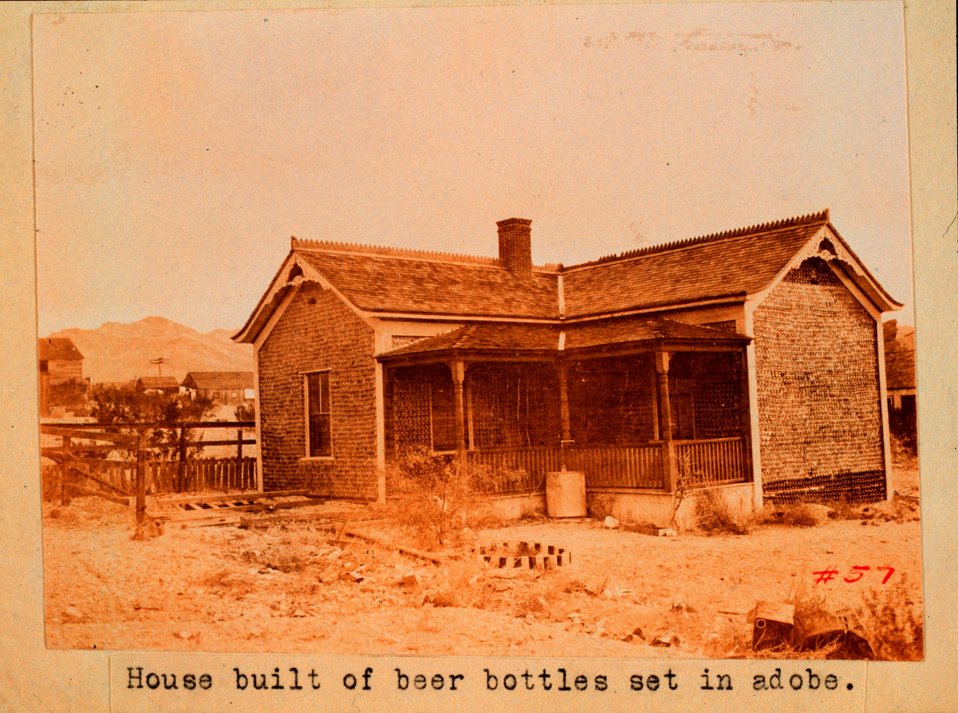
A house constructed from beer bottles on the Nevada-California border.